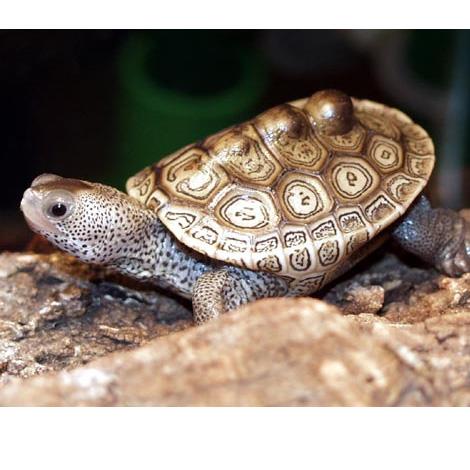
#23 - U.S. Proposals to CoP16

Countdown to CoP16: The U.S. has submitted a proposal to CoP16 to list the Diamondback Terrapin in CITES Appendix II. Native to the United States, diamondback terrapins are vulnerable to habitat loss, bycatch and commercial trade. Trade has increased quickly in recent years with 6,000 terrapins exported from the U.S. in 2006 alone. By listing these terrapins in Appendix II, regulated trade can occur while allowing for the populations to recover.

Diamondback Terrapin. Taken by CITES.